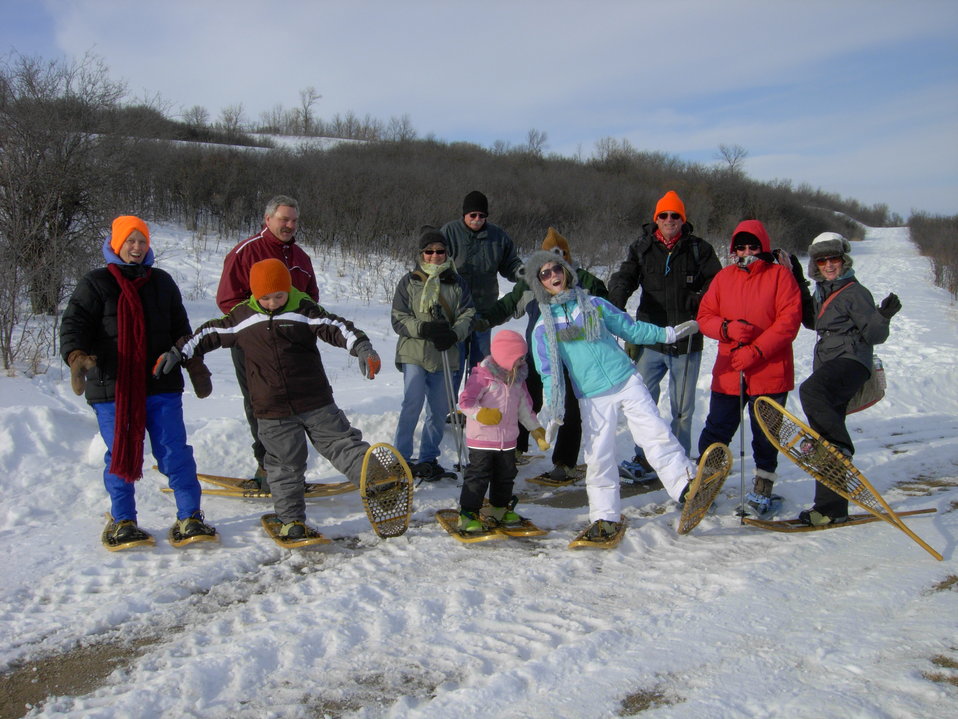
Let's Go Snowshoeing! Jan 29, 2011

The afternoon showshoeing group showing off their shoes!